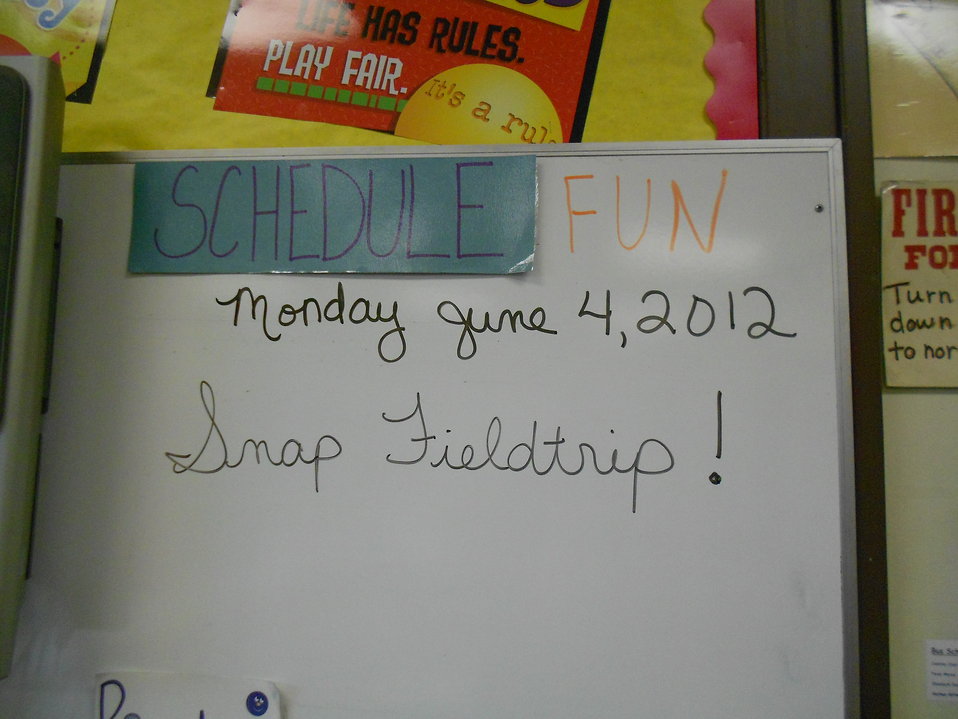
On the schedule today: FUN!

Credit: USFWS

The children loved being outside and seeing nature through the unique perspective of a camera lens.